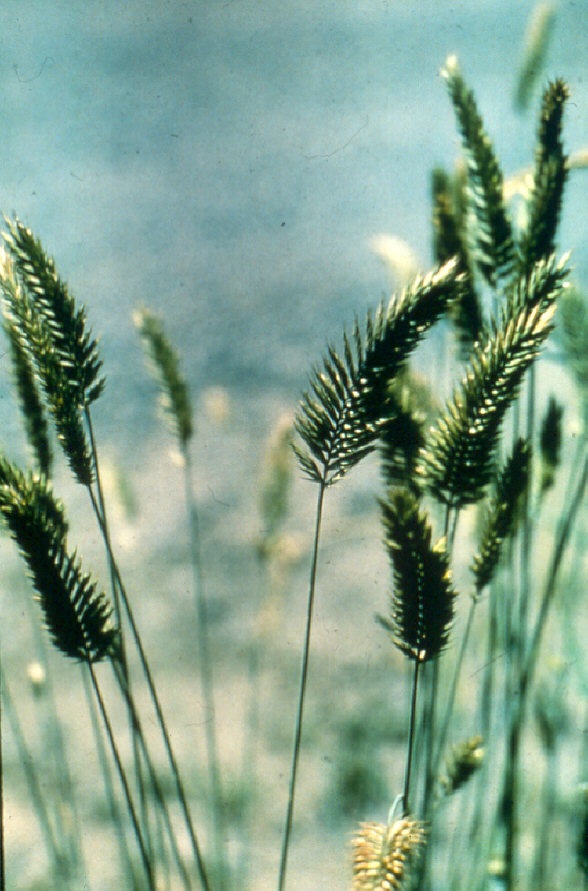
Creasted Wheat grass Salmon FIeld Office UCSC Upper Columbia Salmon Clearwater District